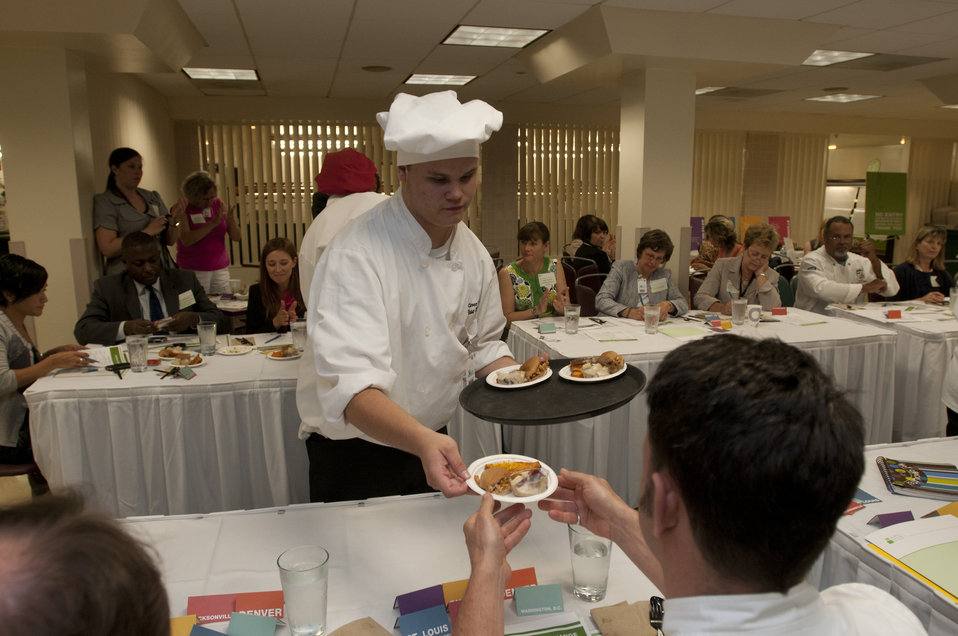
Winston-Salem student chef Isaac Barham serves a judge during the Cooking Up Change, National Healthy Cooking Competition at the USDA in Washington, DC, on Monday, May 23, 2011.